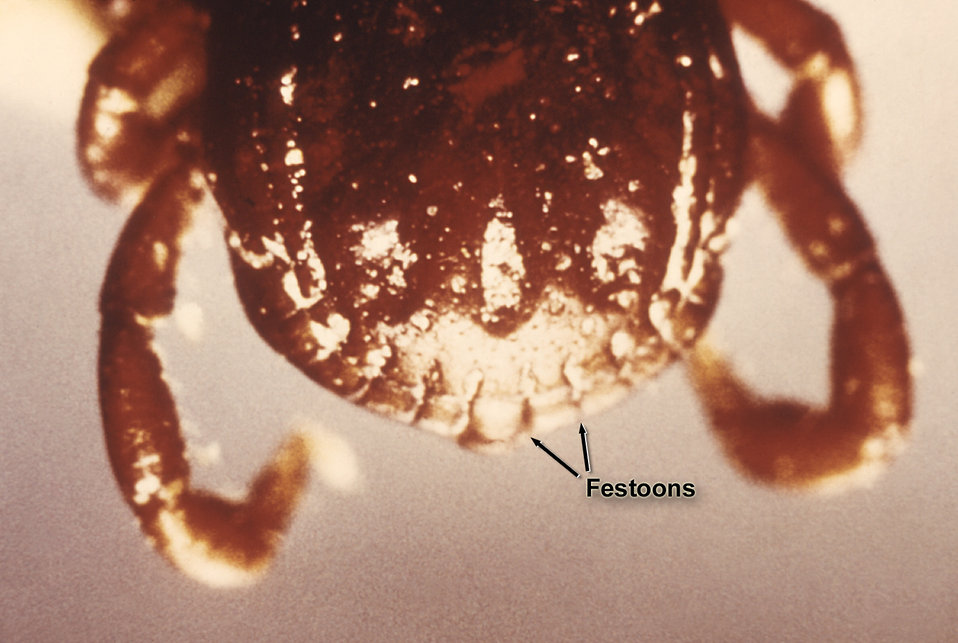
Note the festoons along the posterior abdominal margin of this North American hard tick of the genus Rhipicephalus.